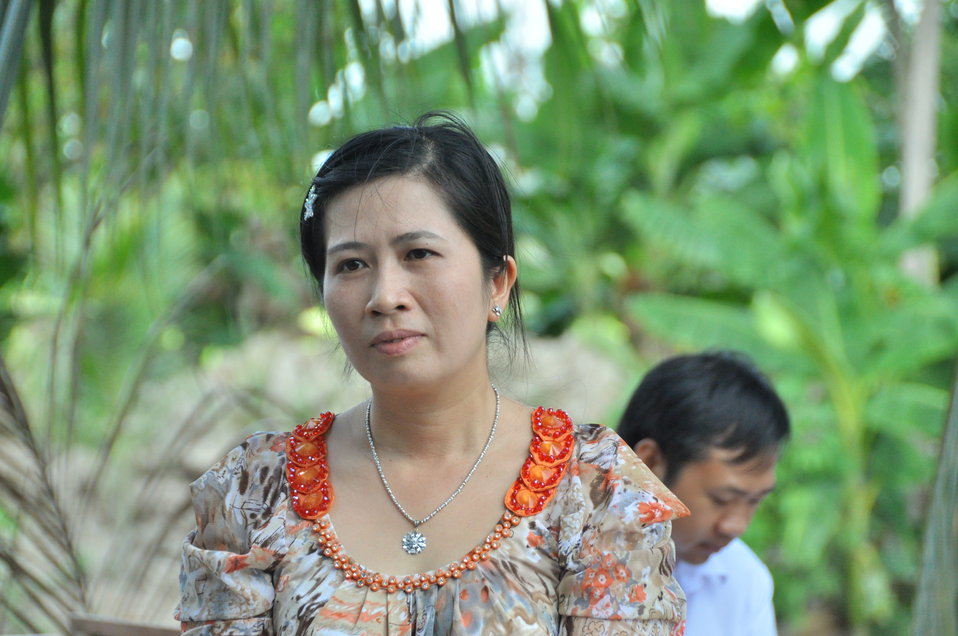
Local duck farmers discuss implementation of biosecurity standards in Can Tho

USAID Vietnam